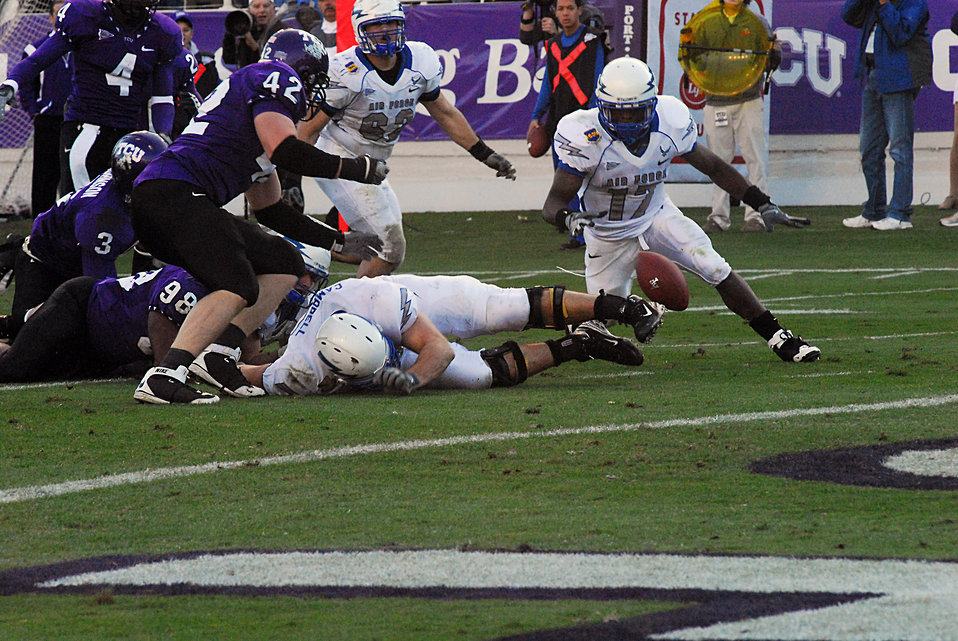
TCU thrashes Falcons

Air Force Falcon tailback Asher Clark fumbles the ball forcing a scramble during the game. Texas Christian University beat Air Force, 44-10 in Amon G. Carter Stadium at Fort Worth, Texas, Nov. 22.